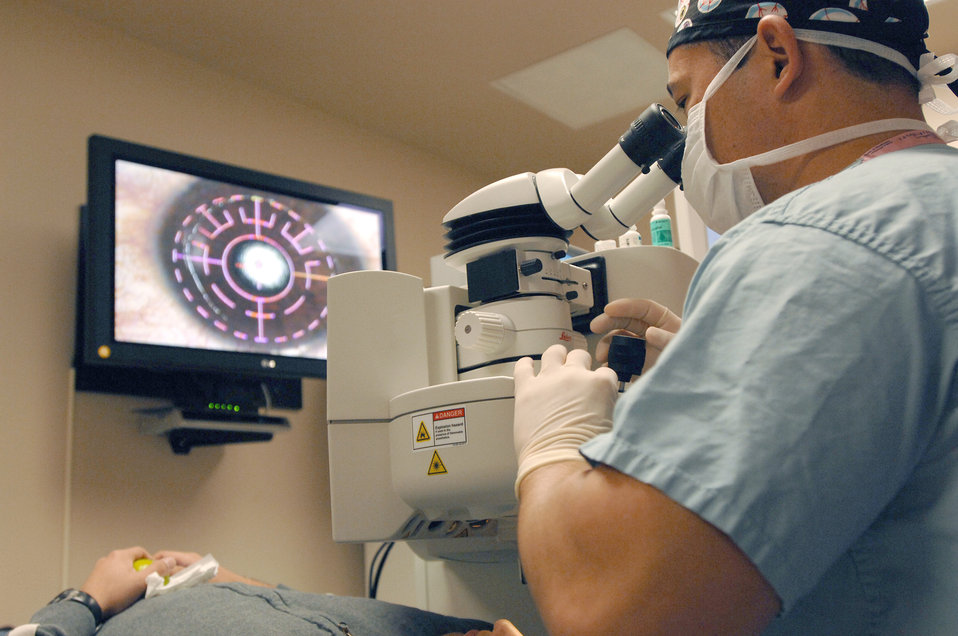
Cornea transplant

Lt. Col. (Dr.) Charles Reilly performs refractive surgery at the Joint Warfighter Refractive Surgery Center Nov. 3, 2010, at Lackland Air Force Base, Texas. Dr. Reilly recently performed a unique procedure to restore a patient's vision using a type of glue to correct a thinning cornea. Dr. Reilly is an ophthalmologist with the 59th Surgical Support Squadron.